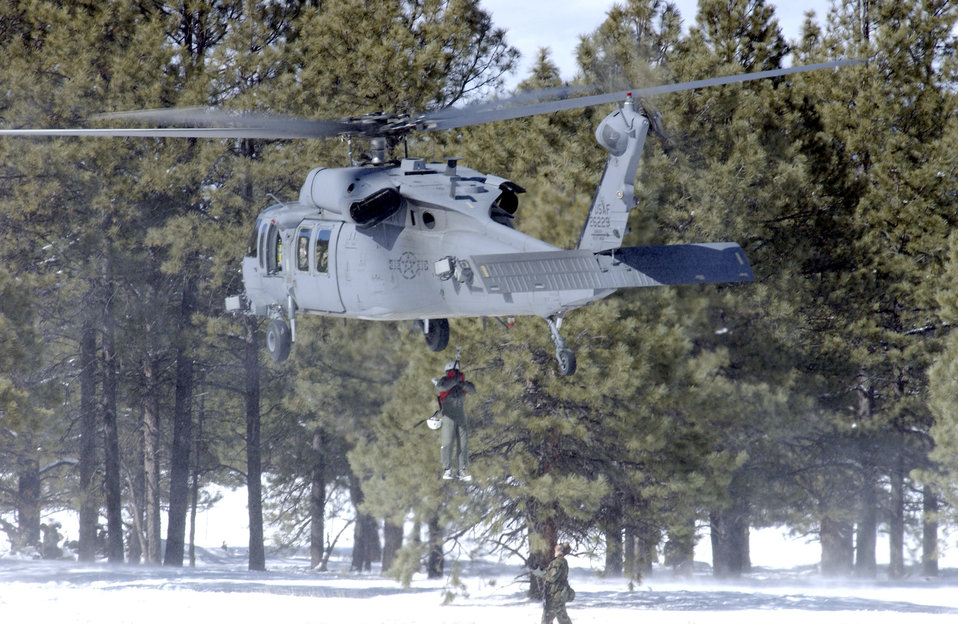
Snow lift

FLAGSTAFF, Ariz. -- A pilot is hoisted up into a HH-60 PaveHawk helicopter during winter survival extraction training here Feb. 7. The pilot and helicopter crew are from the Air Force Reserve’s 305th Rescue Squadron at Davis-Monthan Air Force Base, Ariz.